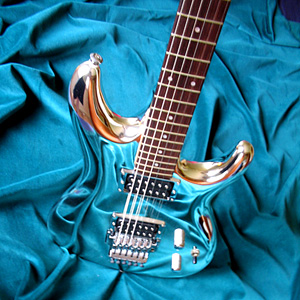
Ibanez JS10th 416 of 506